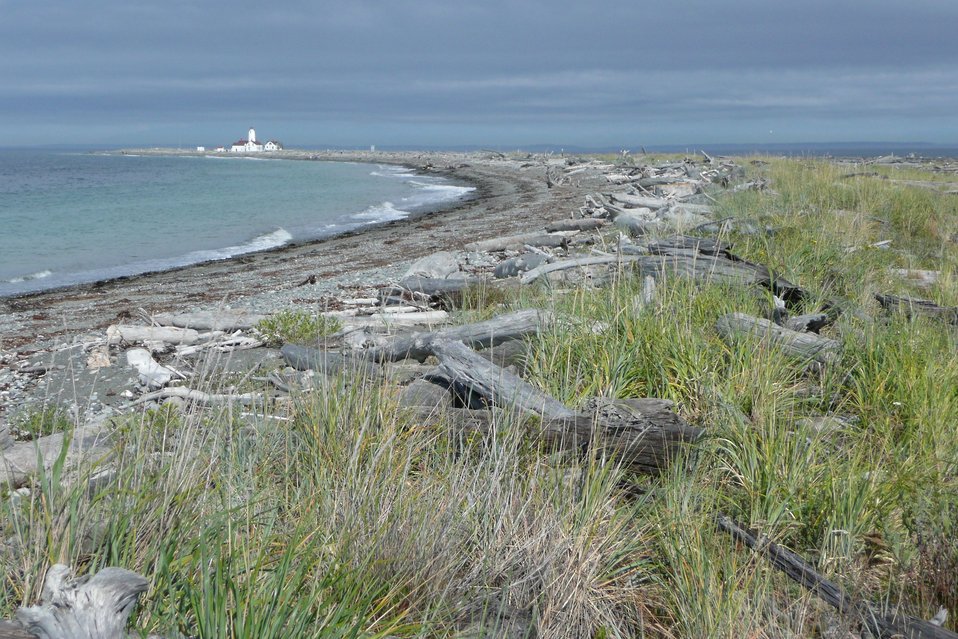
Dungeness Spit Trail

Trail leads to New Dungess Light Station. Dungeness National Wildlife Refuge, WA.